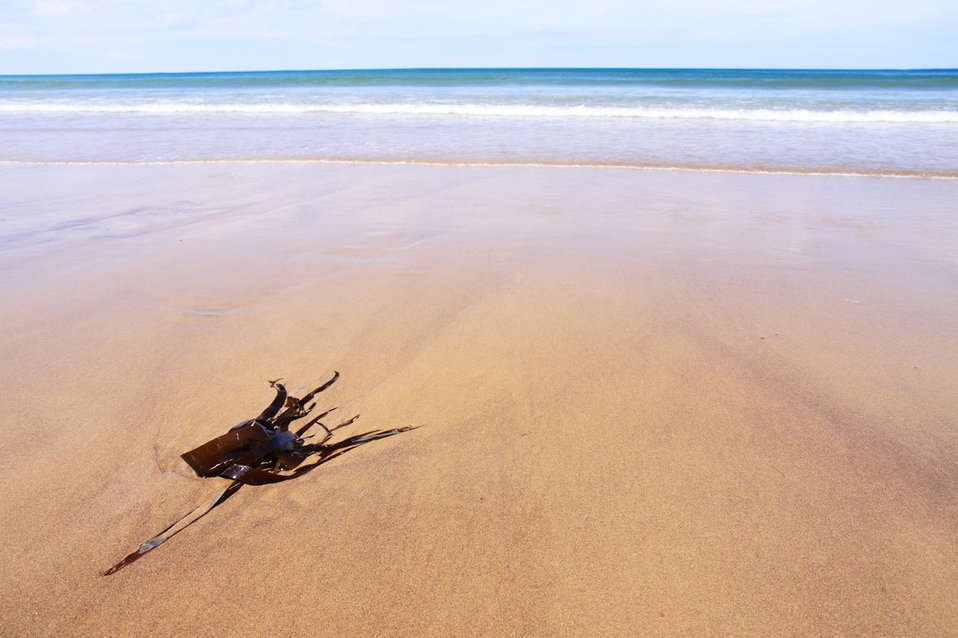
Seaweed and beach

Seaweed on beach.